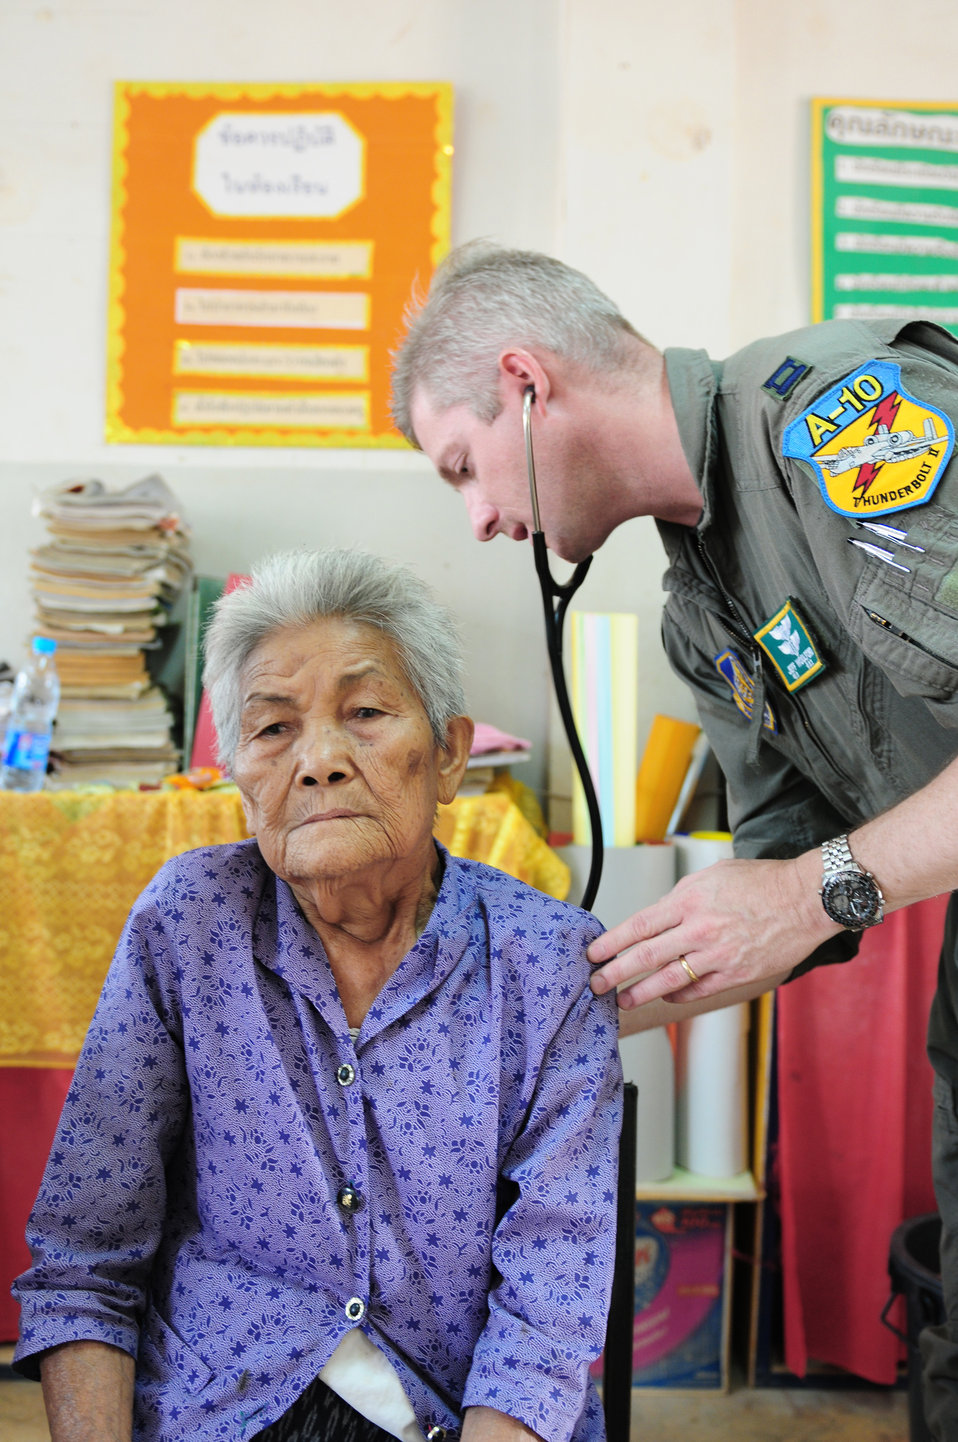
Mulitlateral team helps more than 1,500 Thai residents

Capt. (Dr.) Jeffrey Woolworth examines a local woman during a Cope Tiger 2010 medical civic assistance project March 9, 2010, in Thailand. Doctor Woolworth is assigned to the 25th Fighter Squadron at Osan Air Base, South Korea.